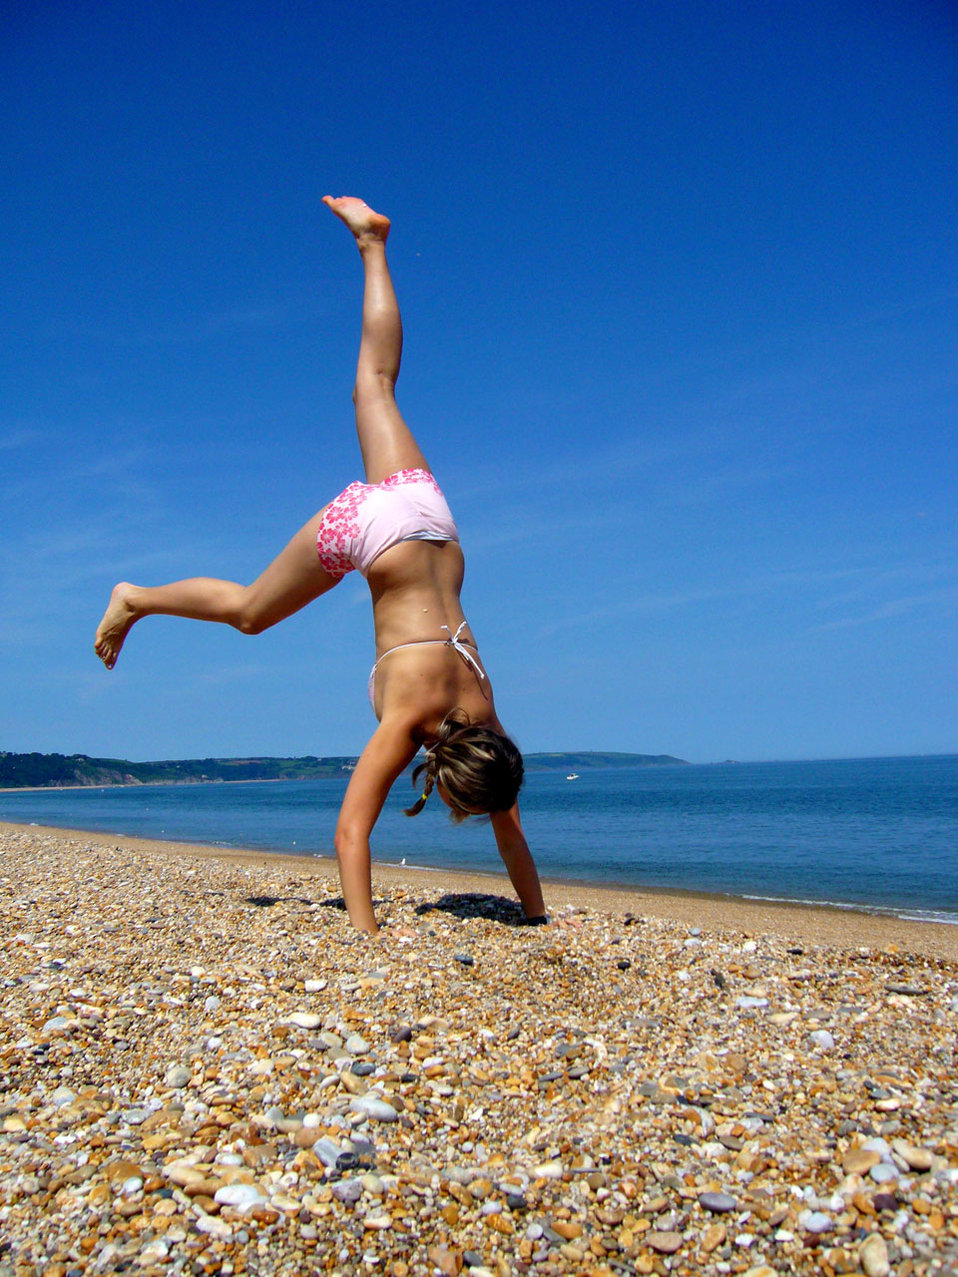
Girl on the beach.